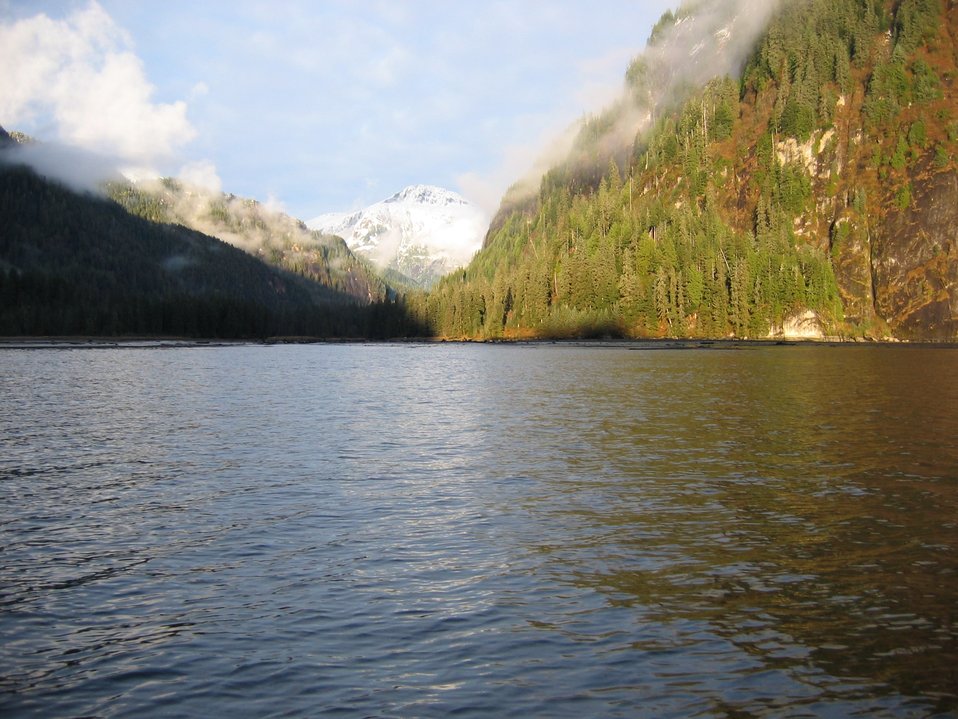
Magnificent scenery in Rudyerd Bay.